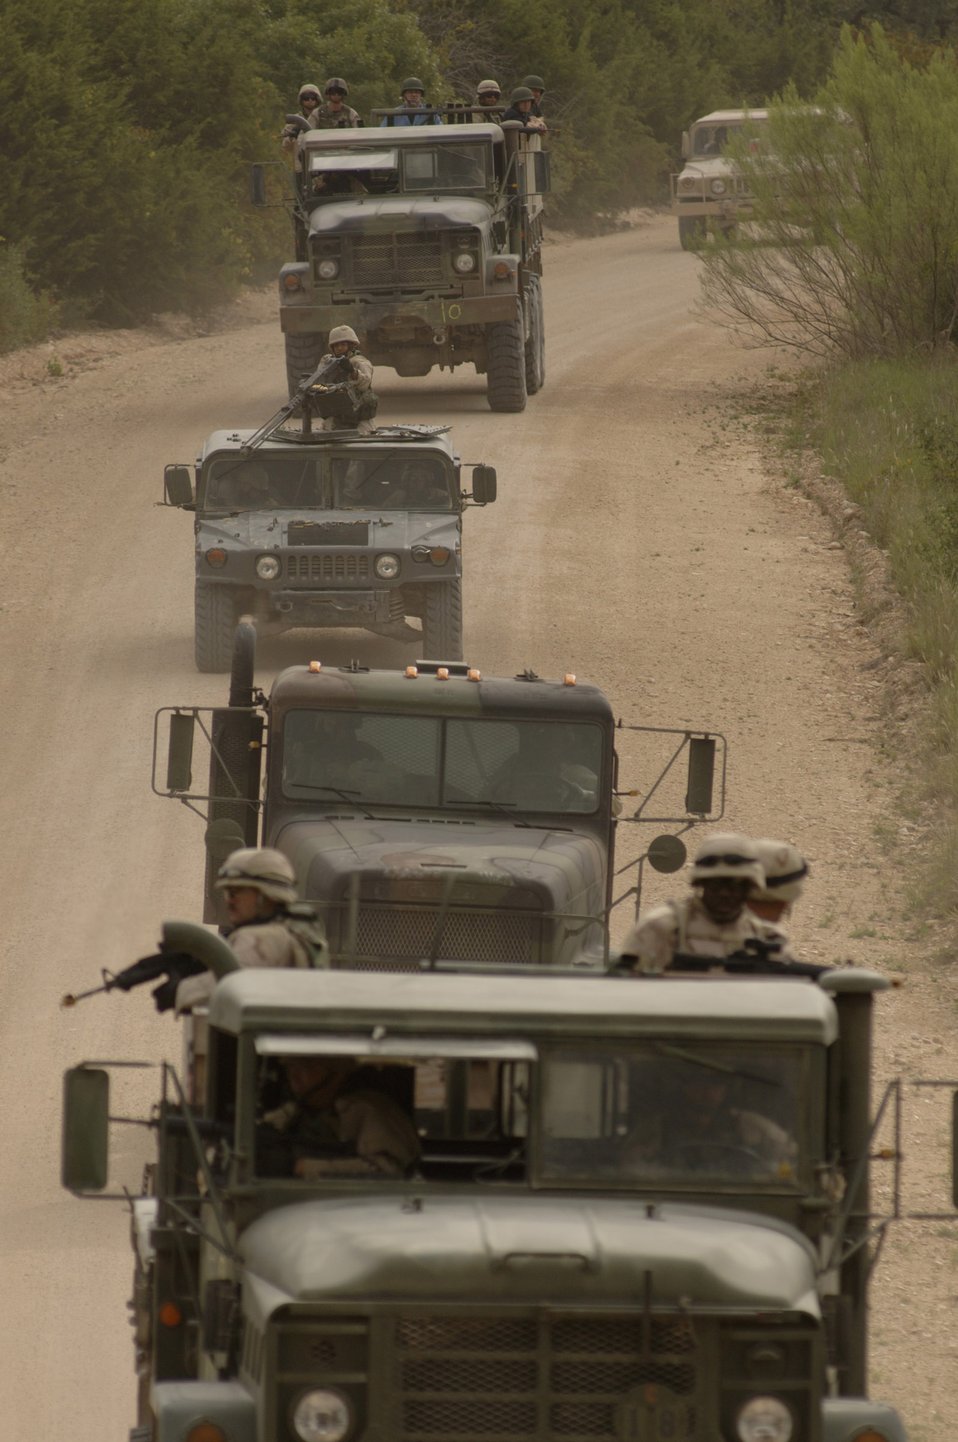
Convoy course training

SAN ANTONIO -- Airmen take part in a truck convoy during a basic combat convoy course on-road training scenario. The course is designed to train transportation Airmen in basic combat skills required to integrate with joint forces in hostile convoy operations. Airmen receive about 300 hours of training at nearby Camp Bullis to prepare them for security escort and line haul missions with coalition convoys supporting Operation Iraqi Freedom.